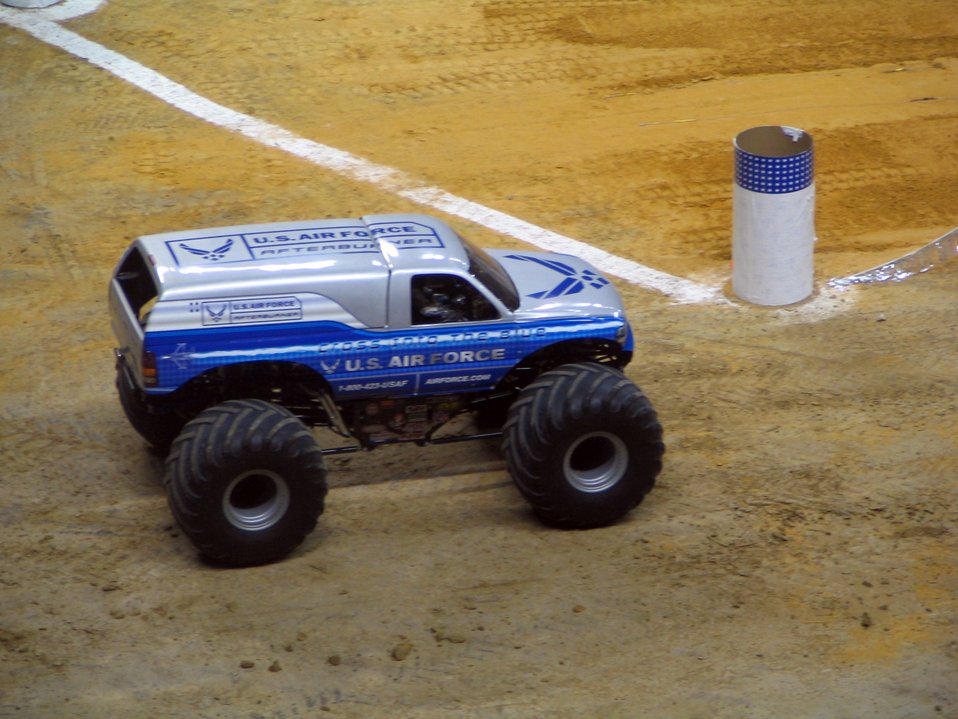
Monster recruiter

SAN ANTONIO (AFPN) -- Afterburner, the Air Force's new monster truck, takes the corner in the final race against the Grave Digger during the San Antonio Monster Jam, Jan. 14. This is only the second race in which the truck, one of the newest Air Force recruiting tools, has competed. Afterburner, driven by Paul Cohen, made the finals Jan. 14, but was edged out by Grave Digger in the final match.